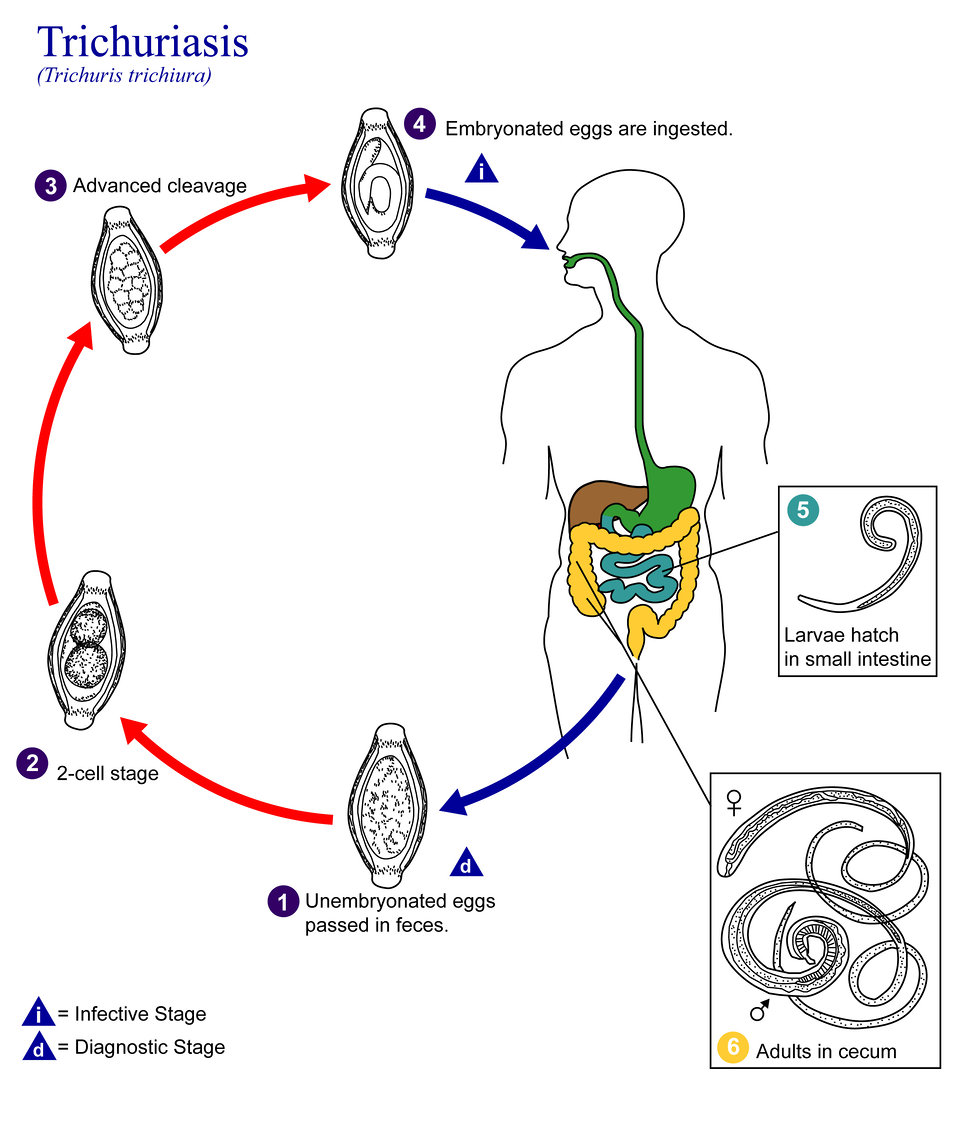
This is an illustration of the life cycle of Trichuris trichiura, the causal agent of Trichuriasis.